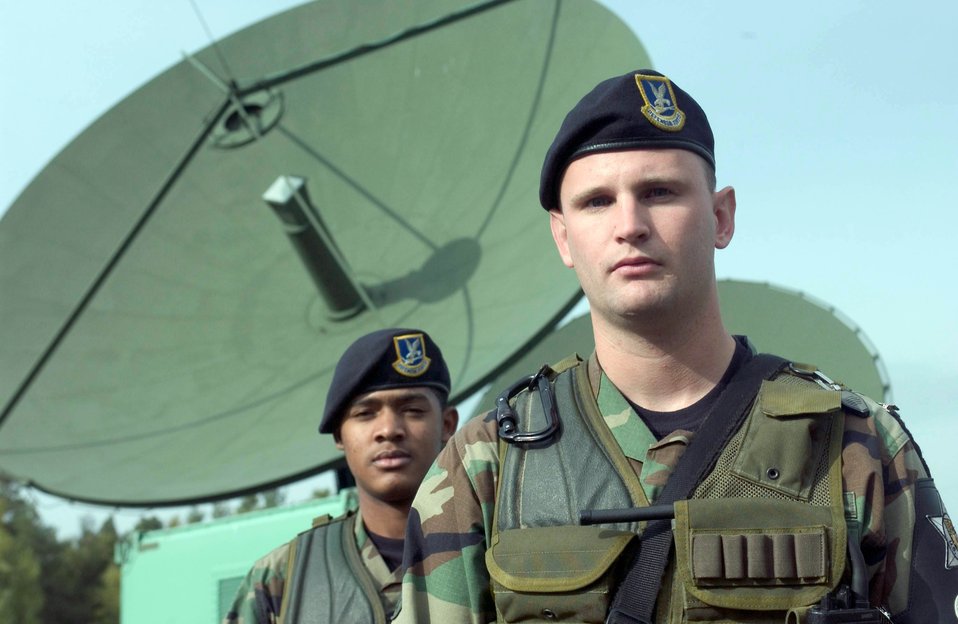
Standing guard

KAPAUN AIR STATION, Germany -- Law enforcement specialists Airmen 1st Class Adrian Gillette and Timothy Zink are responsible for the security here at Detachment 1 of the 460th Space Communication Squadron. They are assigned to the 569th U.S. Forces Police Squadron at nearby Vogelweh Air Base. The Airmen walk the perimeter of the satellite relay station, and they check the condition of the fence, debris gathered against it and suspicious activity. The detachment provides critical defense communications data to other units around the world.